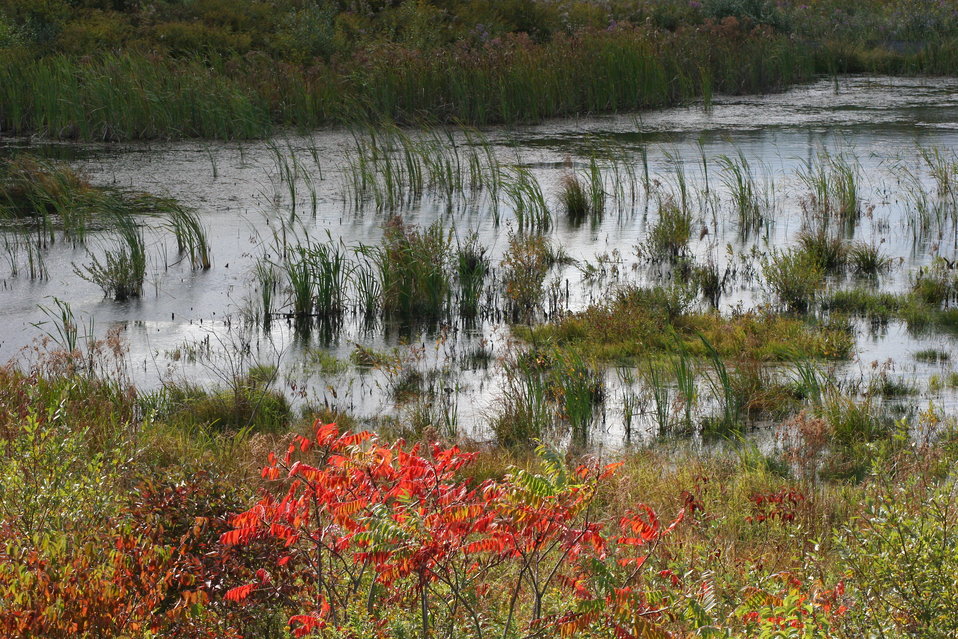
Fall Scene at Great Bay NWR

Fall scene at Great Bay National Wildlife Refuge, Newington, NH.